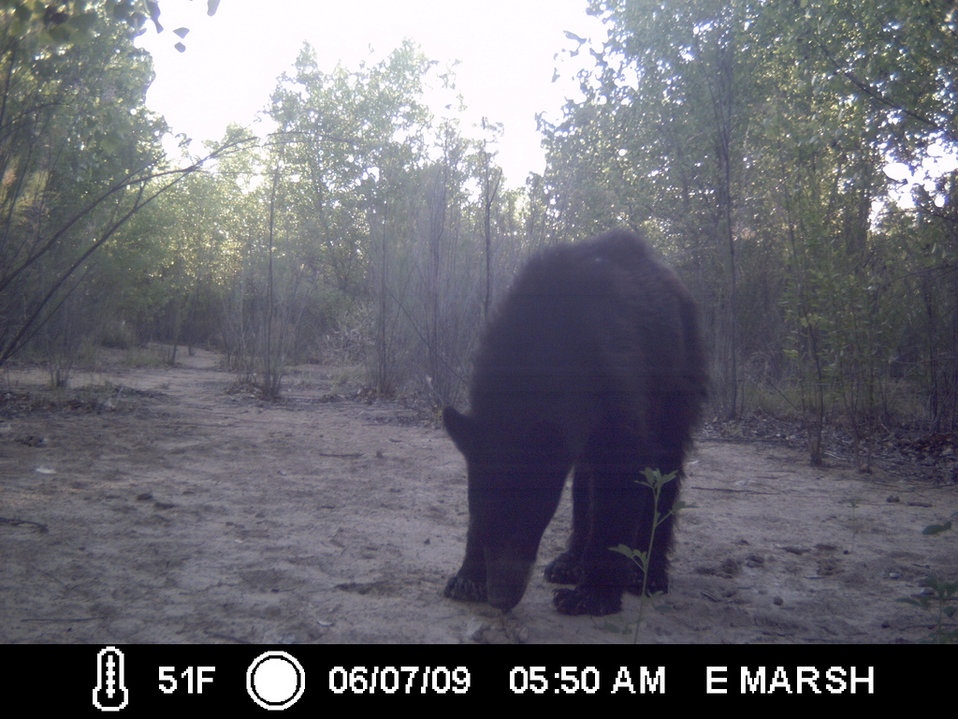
black bear

Bosque del Apache National Wildlife Refuge, NM
Camera trap project by Matthew Farley, Jennifer Miyashiro and James Stuart
Photo made available by J.N. Stuart, Creative Commons